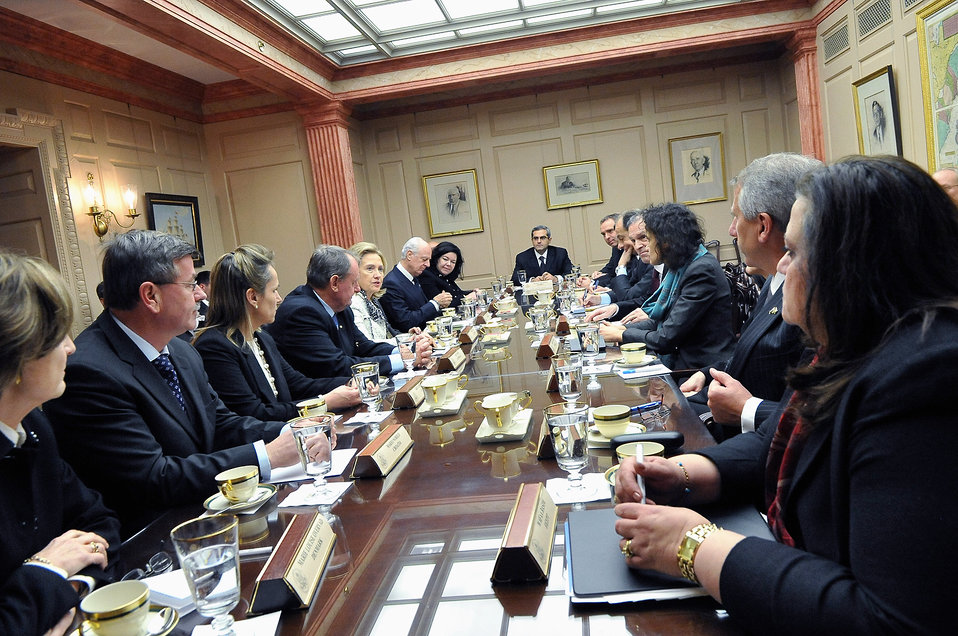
Secretary Clinton Meets With Special Represenatives for Afghanistan and Pakistan

U.S. Secretary of State Hillary Rodham Clinton meets with meets with Special Representatives for Afghanistan and Pakistan (SRAP) at the U.S. Department of State in Washington, D.C., on January 14, 2011.